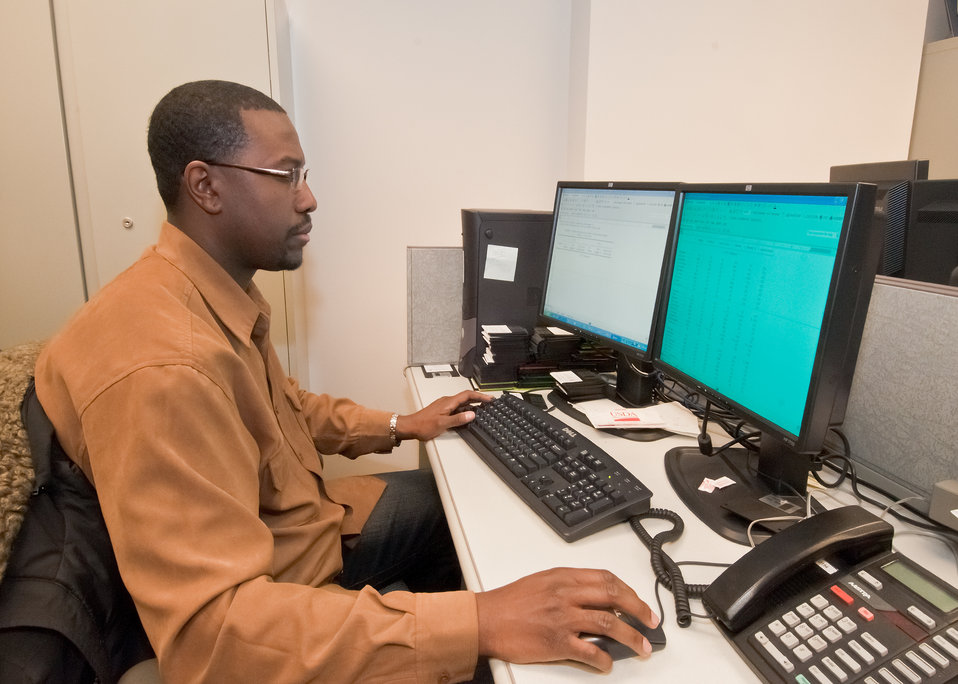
Rodney Christian a reporter with Dow Jones reviews the United States Department of Agriculture, National Agricultural Statistics Service March Agricultural Survey before the information is released in Washington, DC, Thursday, March 31, 2011. The NASS lockup is agricultural commodity information held until the Secretary of Agricultural or Secretary’s Designee has signed and released the information. The signing is the official act of recognizing the information as an official USDA document.